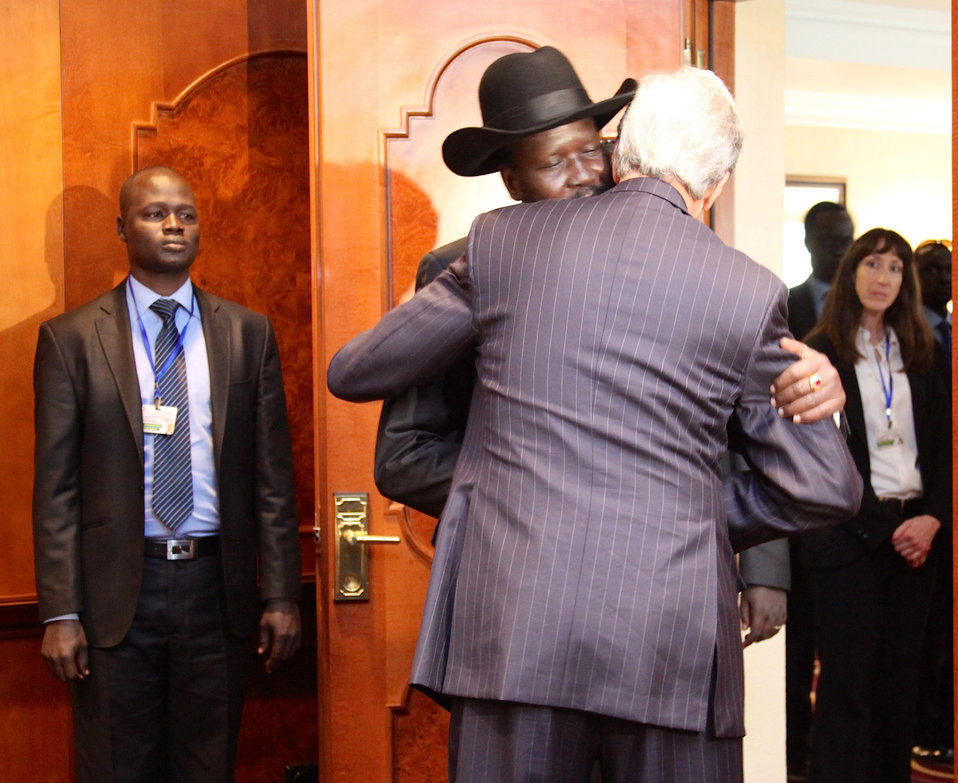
Secretary Kerry Meets With South Sudan President Kiir

U.S. Secretary of State John Kerry meets with South Sudan President Salva Kiir before the conclusion of the 50th anniversary African Union Summit in Addis Ababa, Ethiopia, on May 26, 2013.